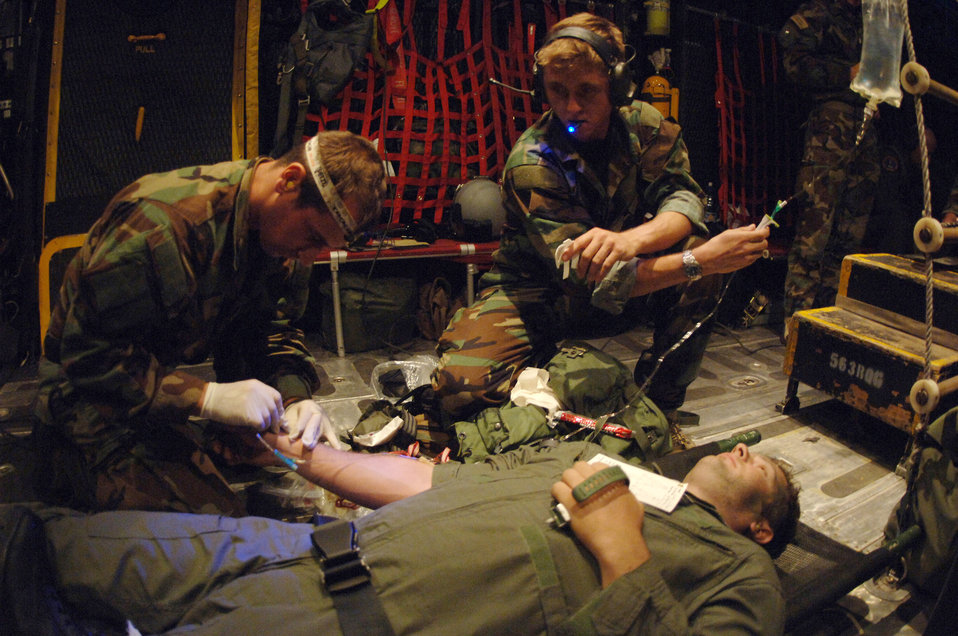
Medical assistance training

Pararescuemen provide